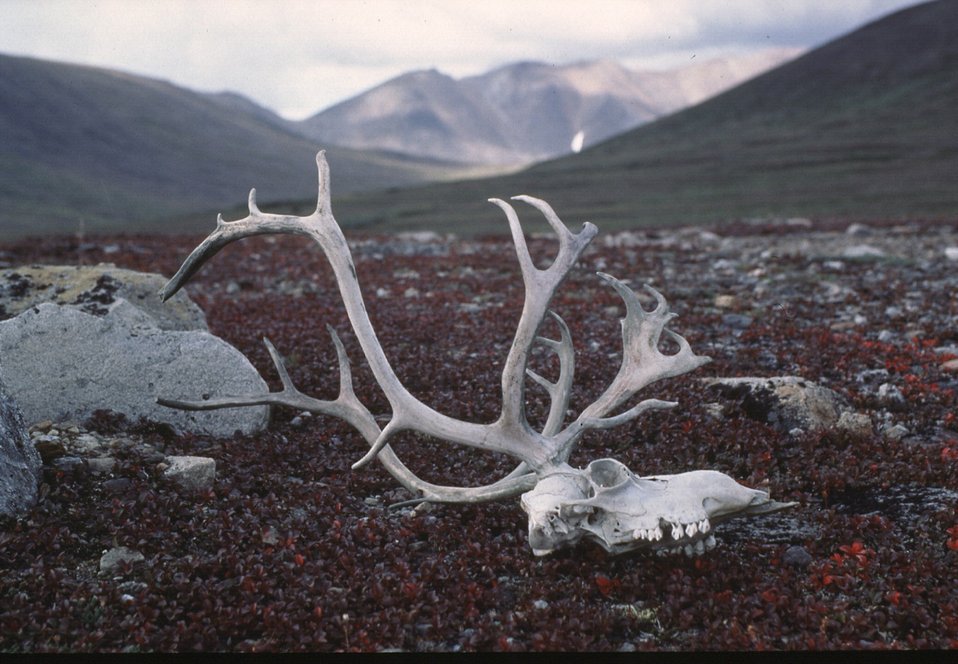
Caribou skull and fall tundra near Salmon Lake, Seward Peninsula